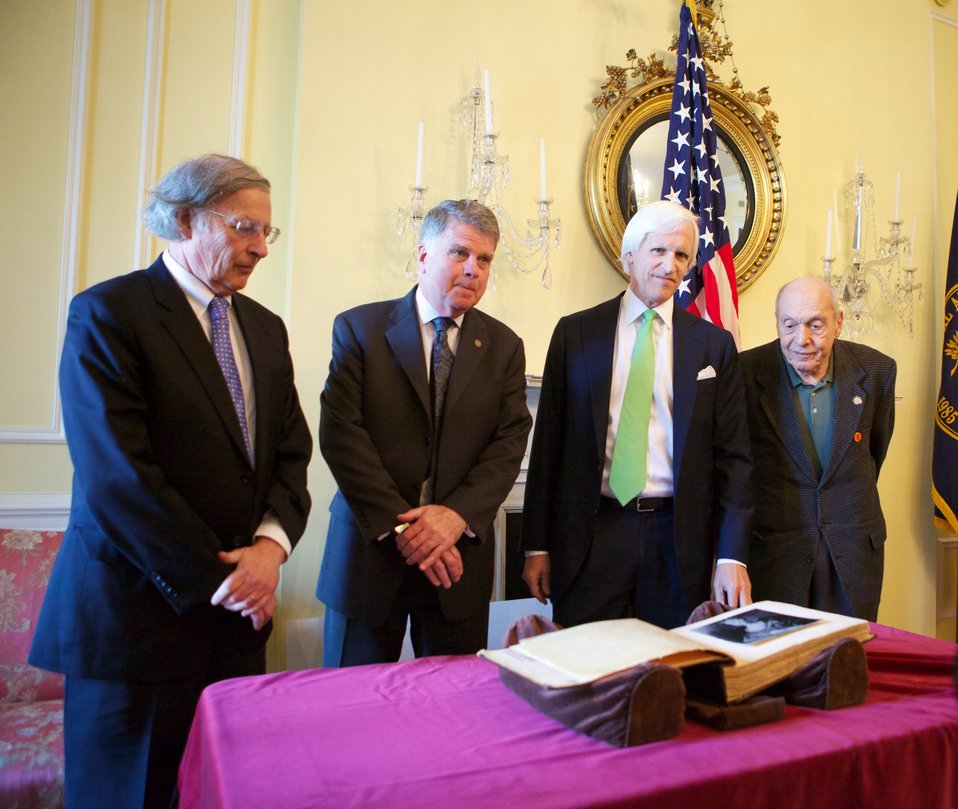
Hitler Album Donation Event